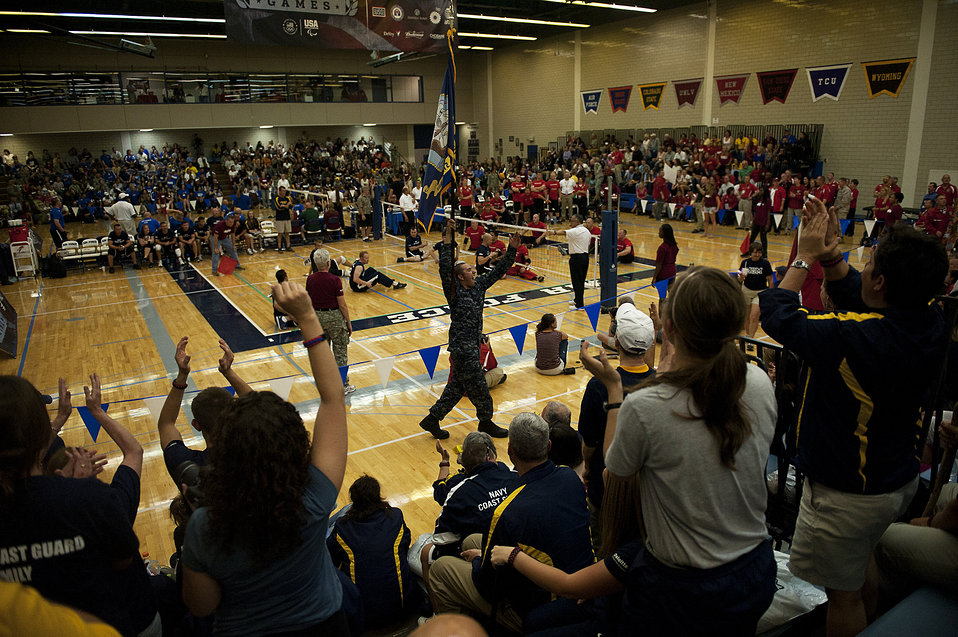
Warrior Games

Volunteers, most wearing maroon colored shirts, are positioned all over the gymnasium as they assist during a sitting volleyball game between the Navy and the Marine Corps teams during Warrior Games 2012 at the U.S. Air Force Academy in Colorado Springs, Colo., May 3, 2012.